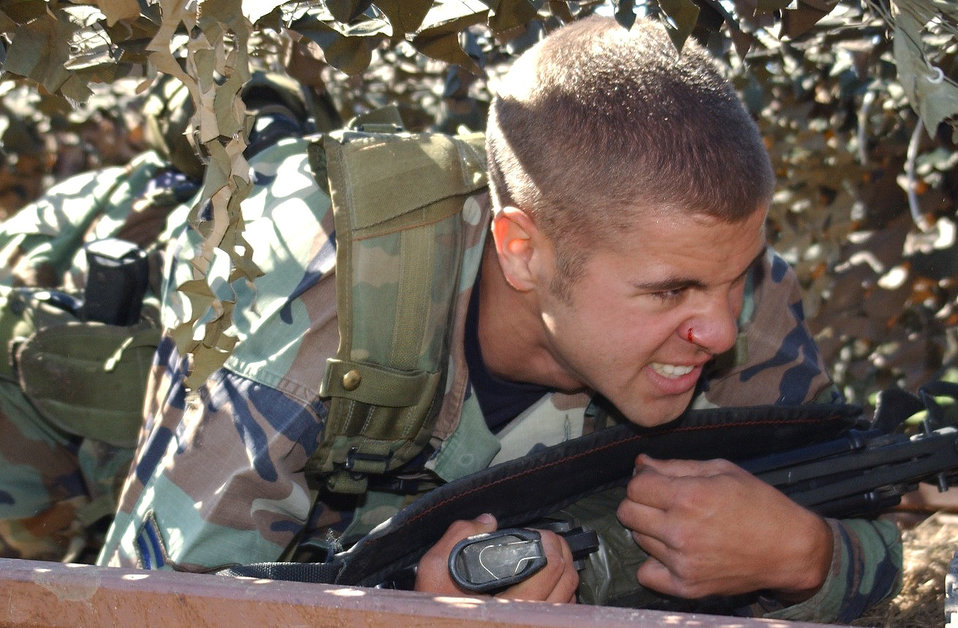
All-stars competing at Defender Challenge 2003

CAMP BULLIS, Texas -- Airman 1st Class Steven Neshkoff fights through the low-crawl obstacle here during Defender Challenge 2003. This year's competition is taking place Oct. 10 to 16. Defender Challenge pits all-star security forces teams from Air Force major commands, the British Royal Air Force Regiment and the Department of Energy against each other in events highlighting marksmanship, physical endurance, tactics, teamwork and leadership. Neshkoff is from the 741st Security Forces Squadron at Malmstrom Air Force Base, Mont., and a member of the Air Force Space Command team.